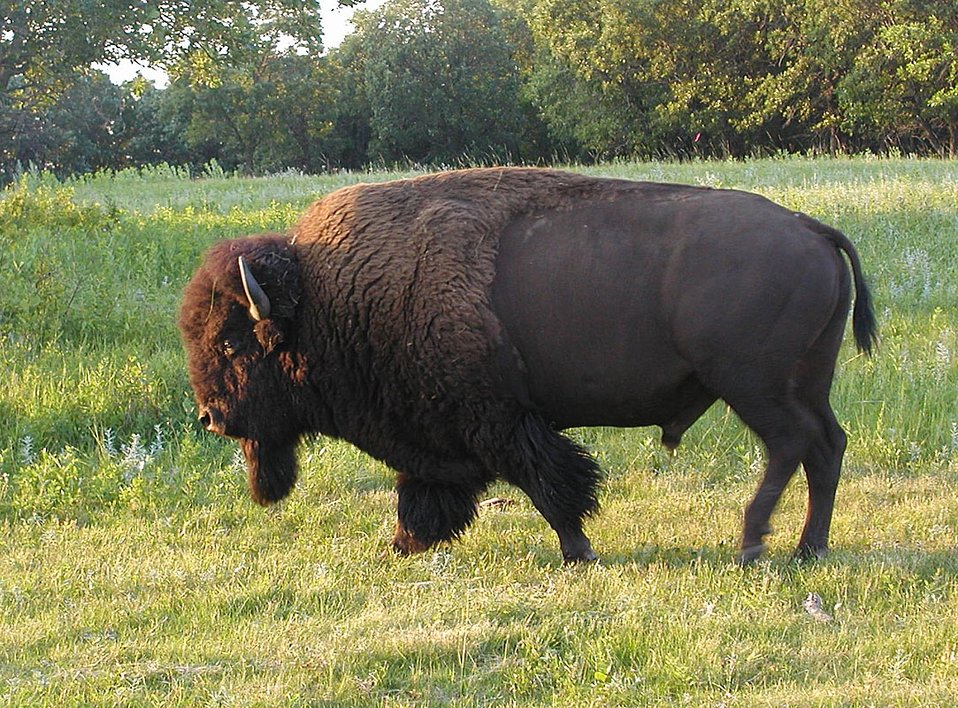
Bison at Sullys Hill National Game Preserve in North Dakota.